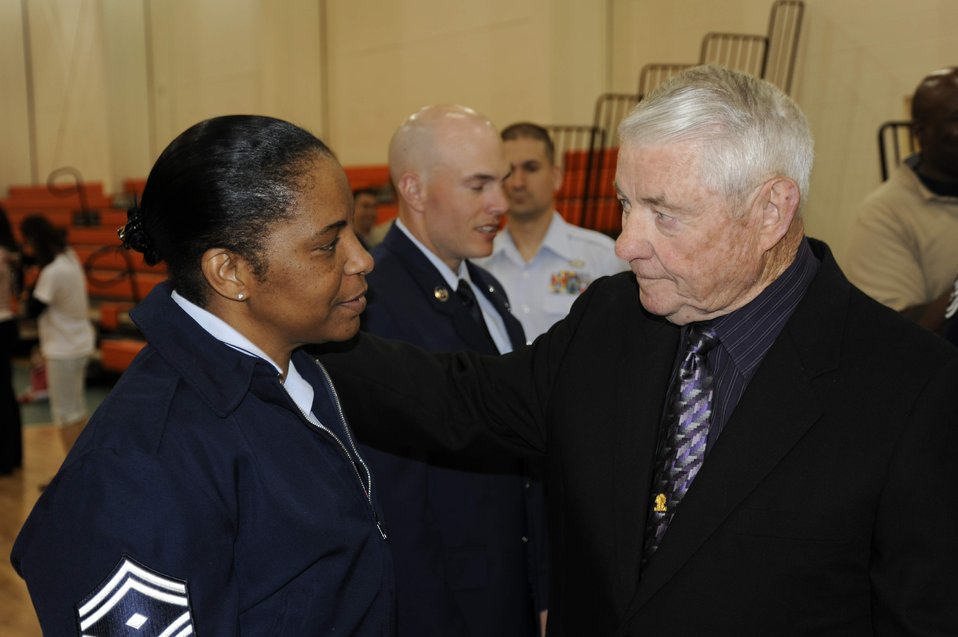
Airmen honor America's veterans during Air Force Week

Retired Chief Master Sgt. of the Air Force Robert Gaylor, congratulates Senior Master Sgt. Shelina Fry for receiving a line number for chief master sergeant, after the